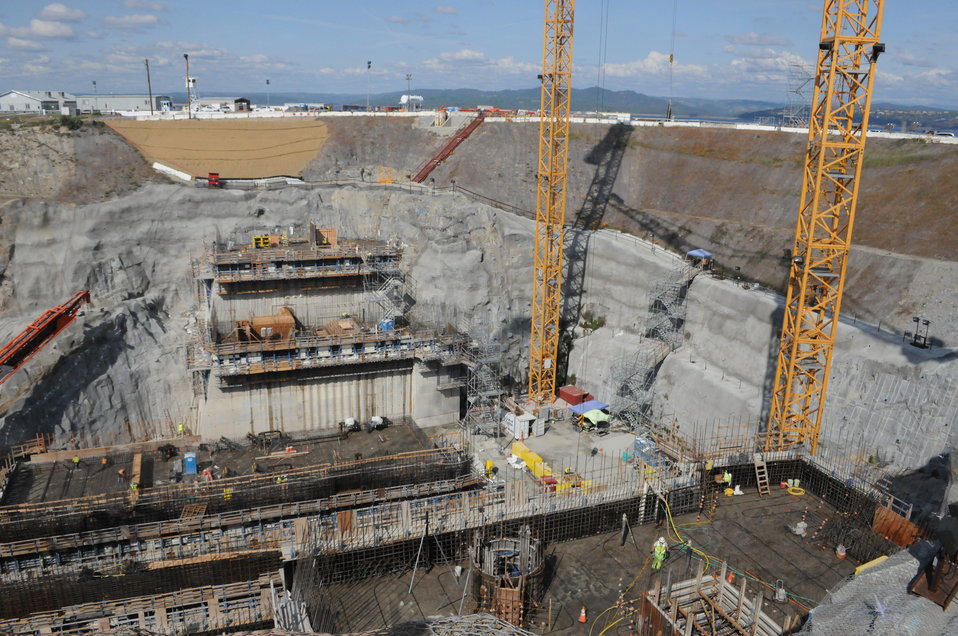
Rising control structure at Folsom Dam

Contractors for the U.S. Army Corps of Engineers Sacramento District continue construction on the control structure—essentially a second dam—for the Folsom Dam auxiliary spillway March 27, 2013 in Folsom, Calif.